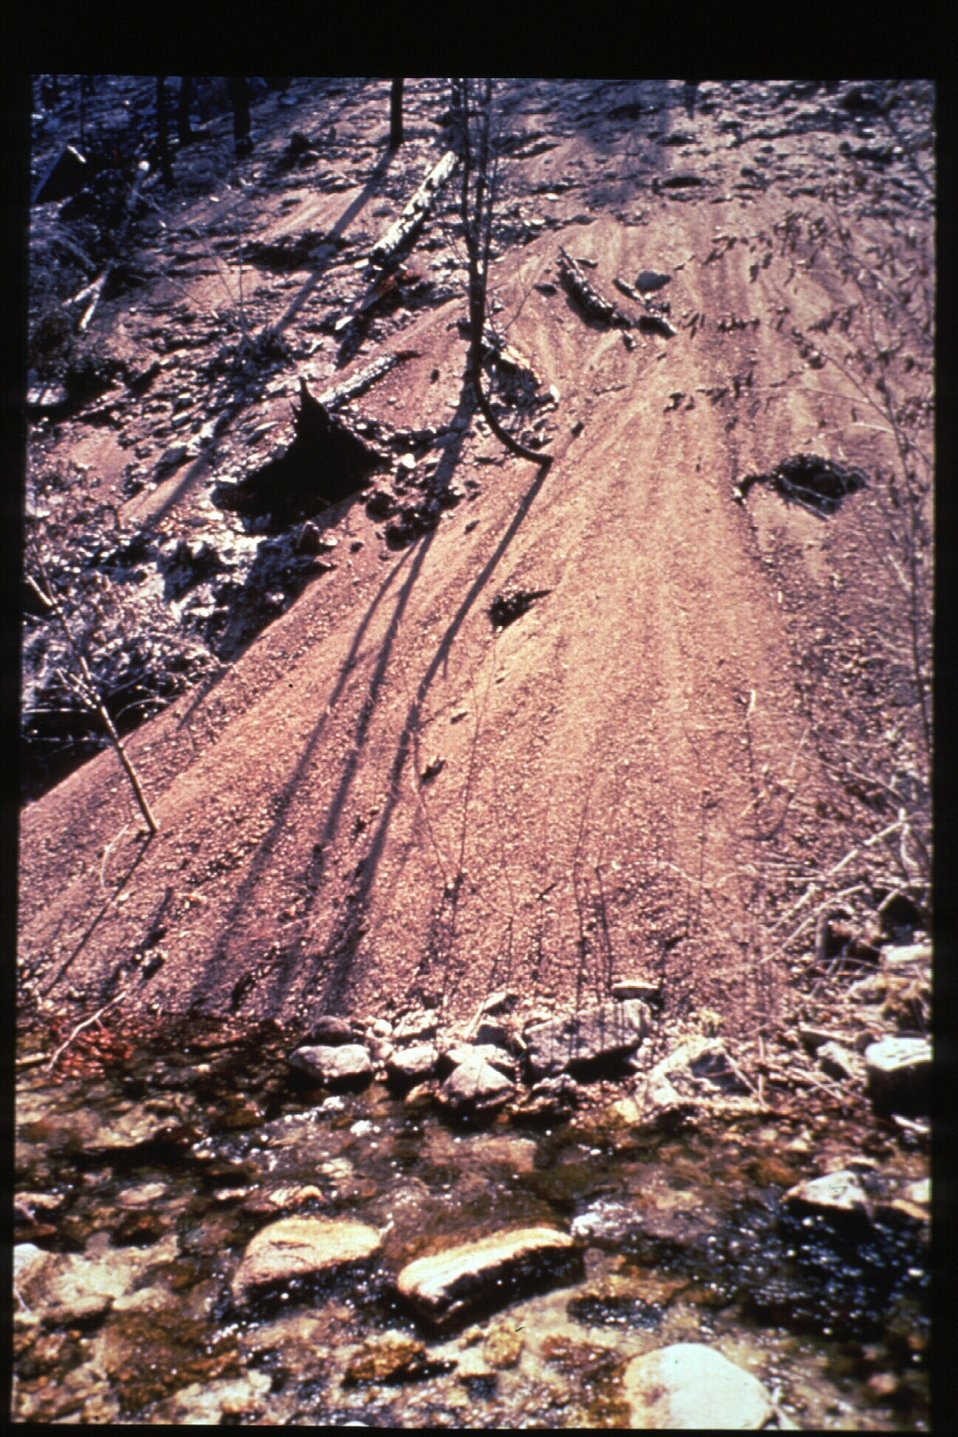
Boise Foothills Fire Danskin Mountains and South Fork of Boise River Erosion Four River Field Office LSRD Lower Snake River District